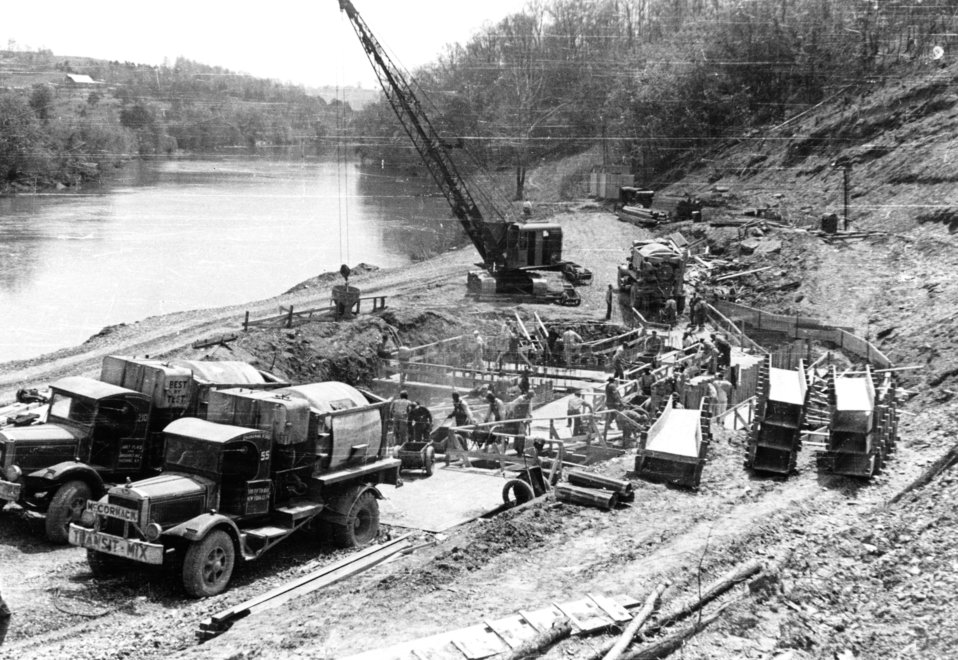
Construction activity at Oak Ridge